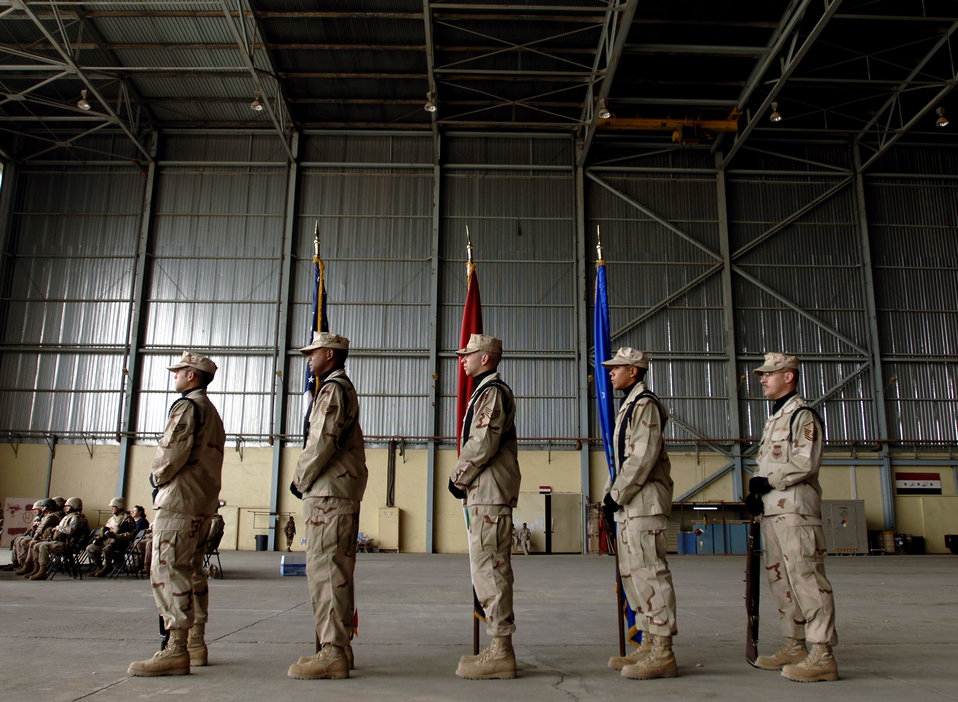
Operation Iraqi Freedom

The Sather Air Base Honor Guard prepares to present the colors at the Unit Activation and Assumption of Command Ceremony for the 370th Air Expeditionary Advisory Group to be commanded by Col. Daniel G. Groeschen on New Al Muthana Air Base April 22.